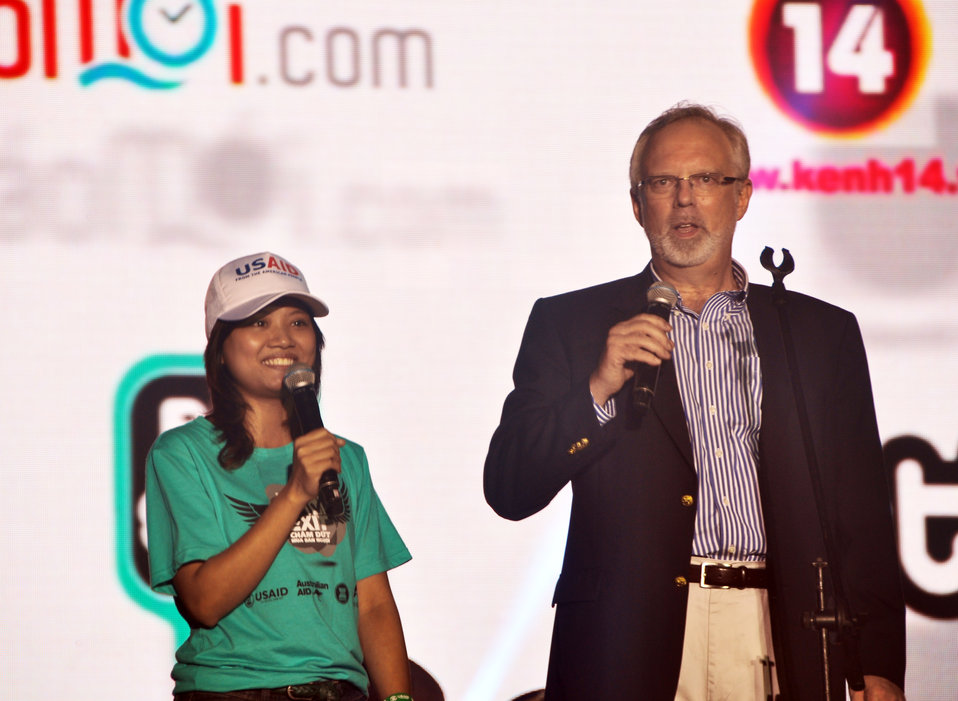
U.S. Ambassador David Shear belts out the message: Stop - human trafficking - NOW.

USAID supports MTV EXIT concert against human trafficking and exploitation